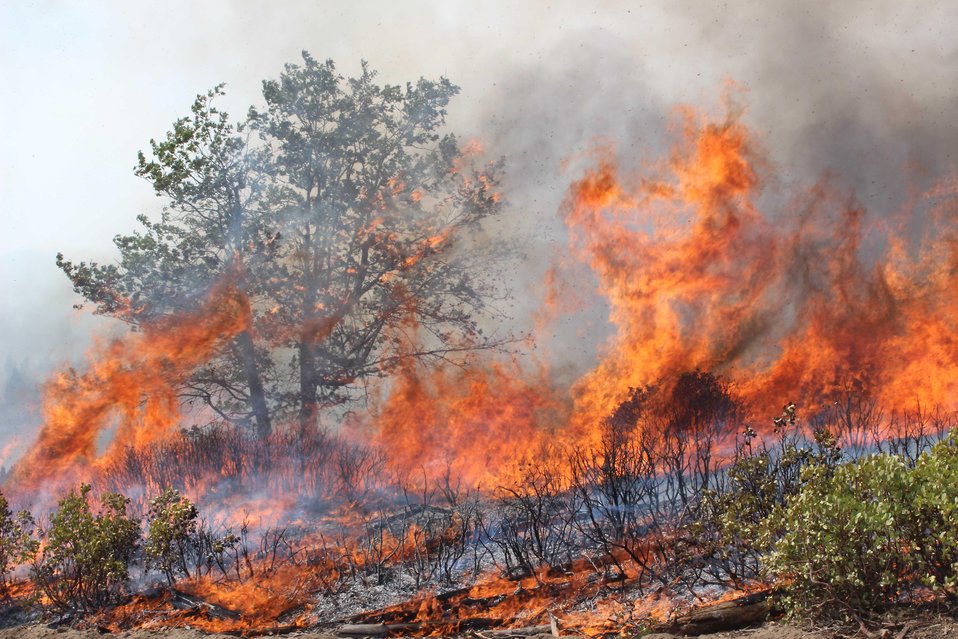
The Rim Fire in the Stanislaus National Forest near in California began on Aug. 17, 2013 and is under investigation. The fire has consumed approximately 235,841 acres and is 70% contained.